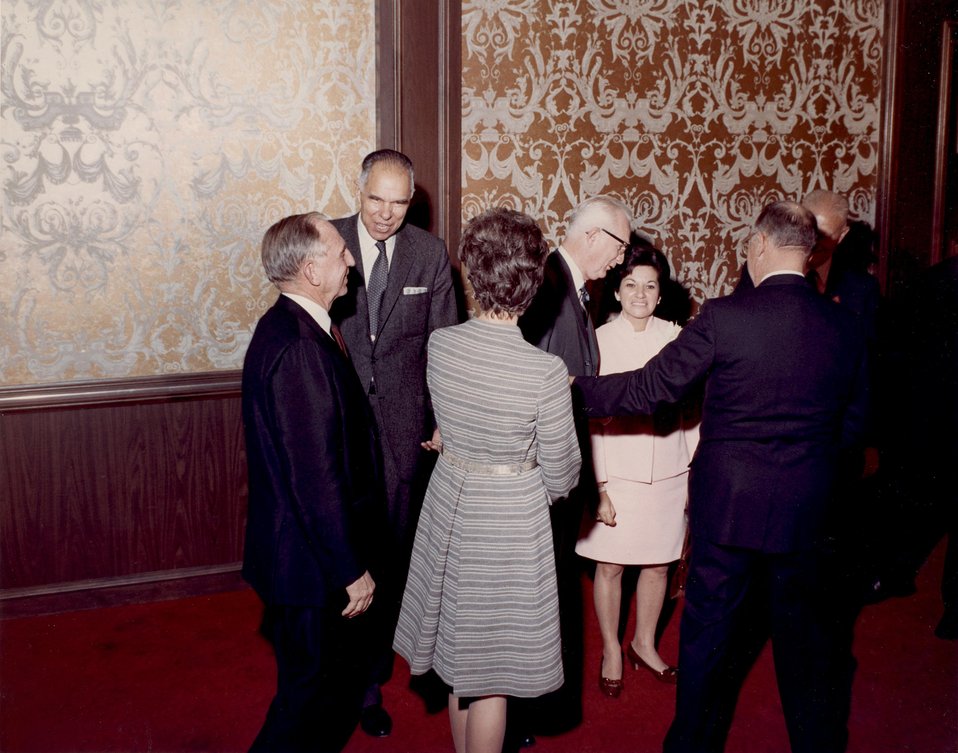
Enrico Fermi Award Ceremony. Imperial Ballroom. San Fransisco Hilton Hotel. 5:30 p.m., December 2, 1969. Fermi Award. Recipient: Walter Zinn. Date: Dec. 2, 1970.